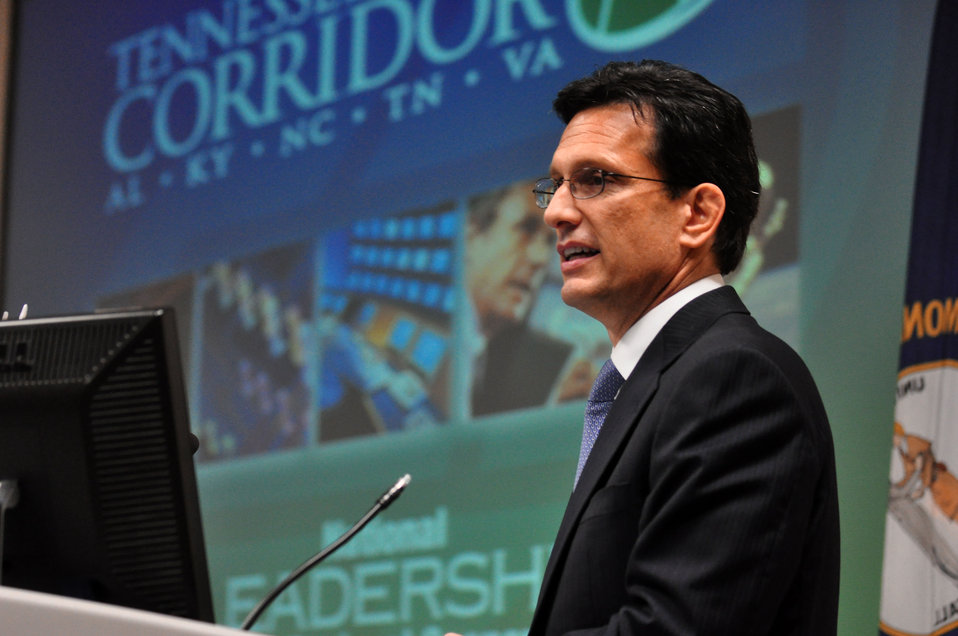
Congressman Eric Cantor Majority Leader Tennessee Valley Corridor Summit Oak Ridge

13-062 DOE photo Lynn Freeny 5-29-2013 Oak Ridge Tennessee